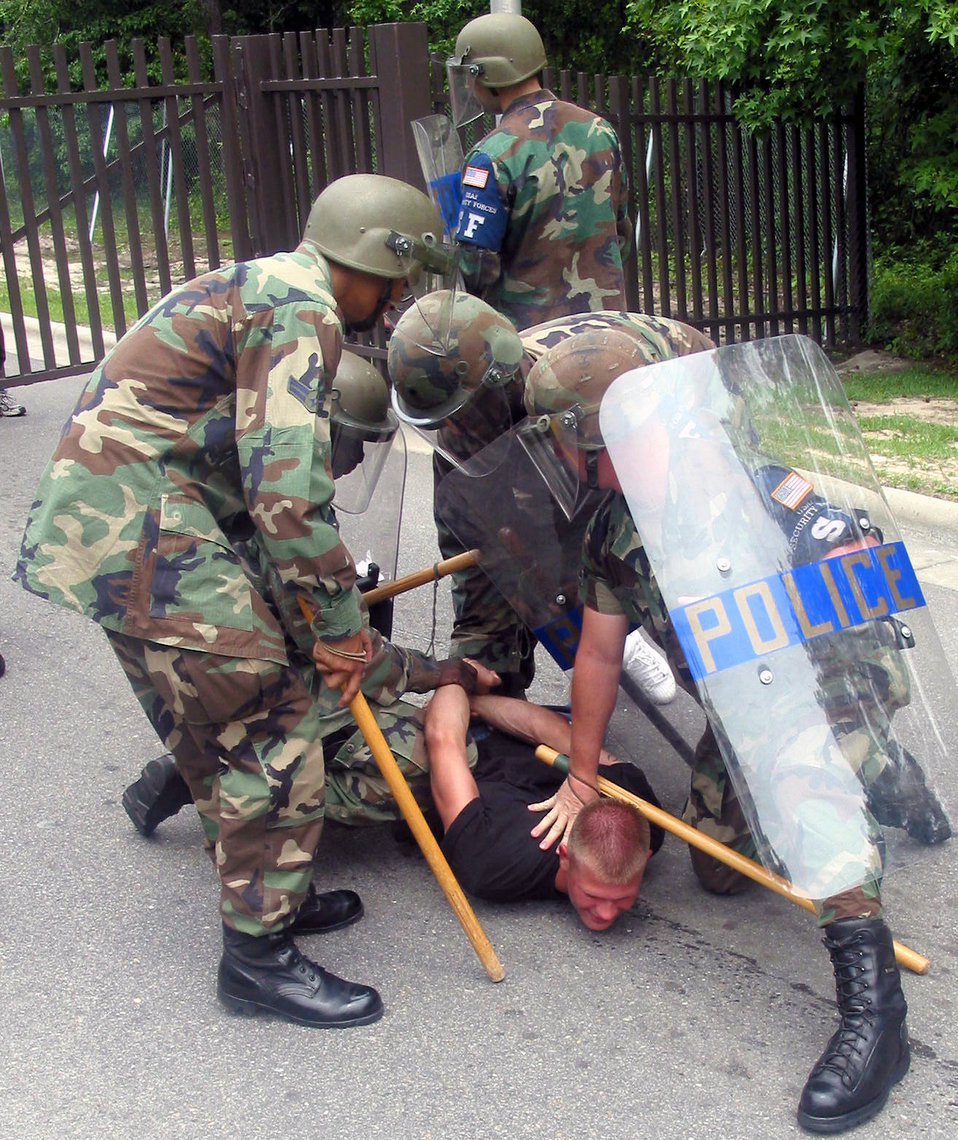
Not on my base

POPE AIR FORCE BASE, N.C., -- Airman 1st Class Larry Nagel, posing as a threatening demonstrator, gets detained by security forces as part of a mock anti-war demonstration during an exercise. Nagel was apprehended after he climbed the fence.